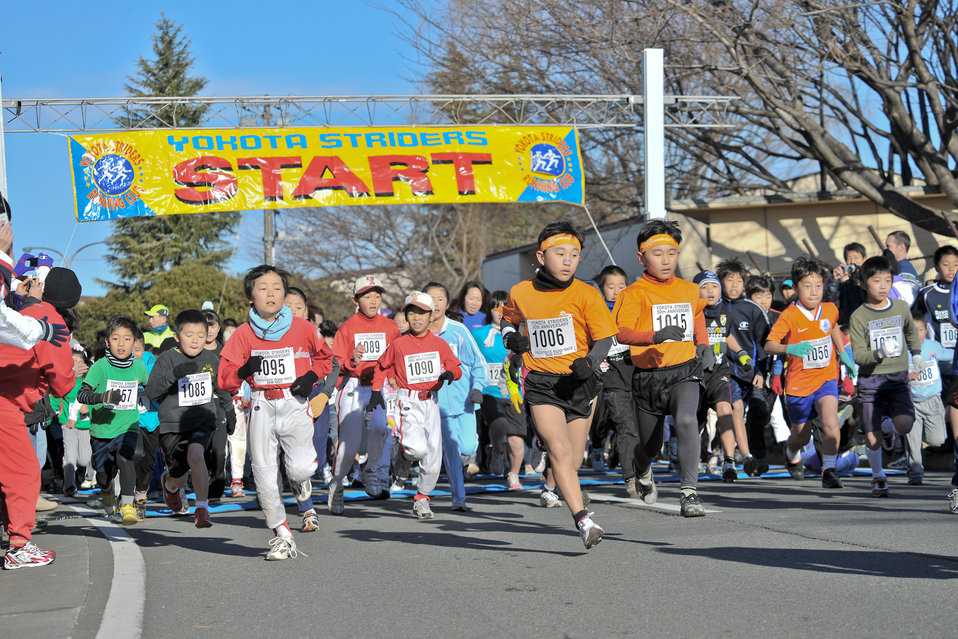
The 30th Annual Frostbite Road Race

Nearly 7,000 runners and another 3,000 spectators braved the brisk winter air for the 30th Annual Frostbite Road Race here Jan. 16.

The race affords a unique opportunity to develop the friendship between Yokota Air Base Airmen and its Japanese hosts, while the proceeds support a number of private organizations at Yokota AB.

Though most of the runners are Japanese, the Frostbite's acclaim has grown such that this year it also drew runners from England, New Zealand and Switzerland, along with about 150 from U.S. military bases throughout Japan.

Beau Veazey, the president of the Yokota Striders Running Club and the host of the annual event, commented on what gives the race such widespread appeal.